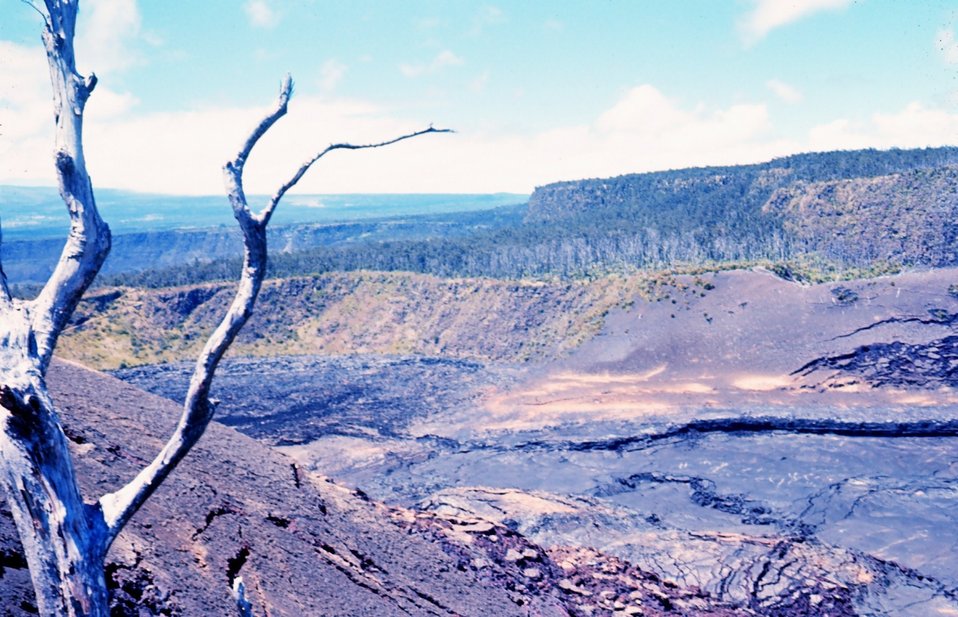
A volcanic crater with cracking floor, basalt cliffs and a dead tree in moon- like volcanic terrain.